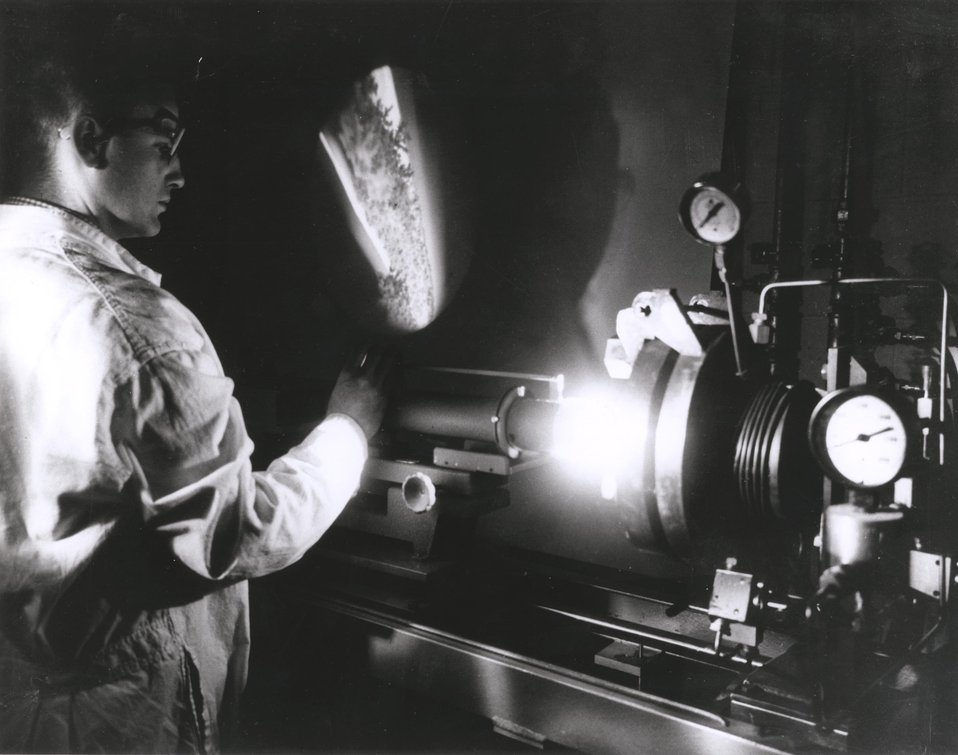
The development of ceramic fuels -- using both uranium and plutonium -- requires considerable ingenuity on the part of the researchers. At Hanford Laboratories, scientists use optical equipment to make microscopic examination of ceramics at temperatures up to 6000 degrees Fahrenheit. c. 1963